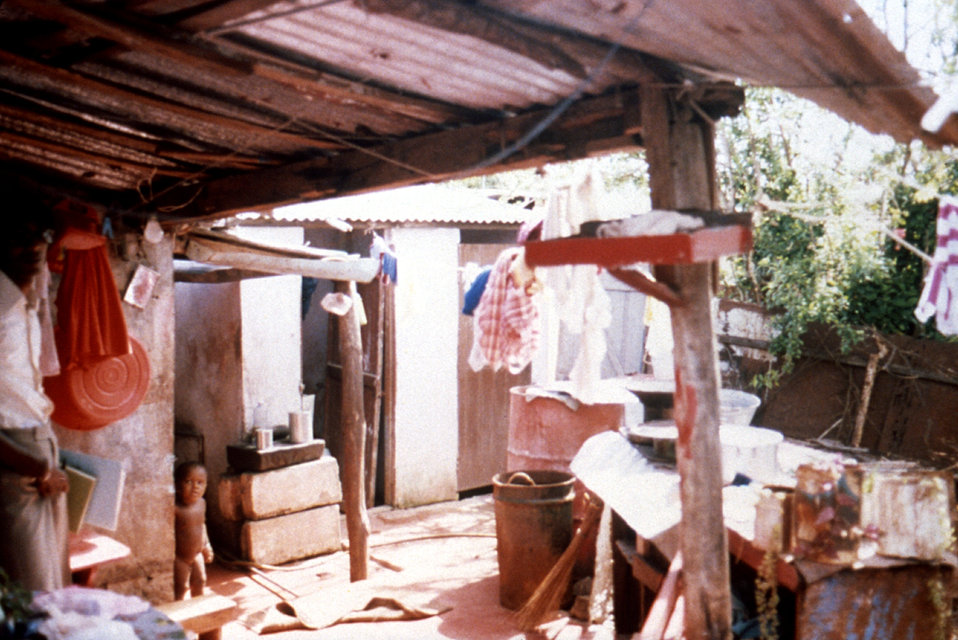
This was the residence of what was determined to be the index case of the 1980 Cite' Roche Bois, Mauritius typhoid outbreak.